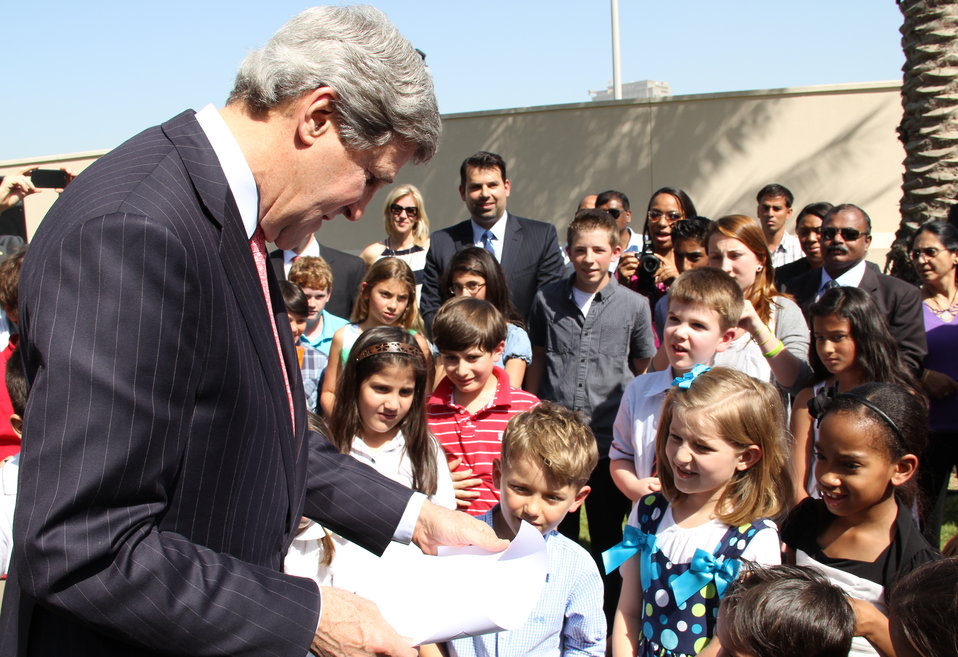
Secretary Kerry Recevies a Drawing

U.S. Secretary of State John Kerry receives a drawing from the child of an employee at the U.S. Embassy in Abu Dhabi, United Arab Emirates, on March 5, 2013.